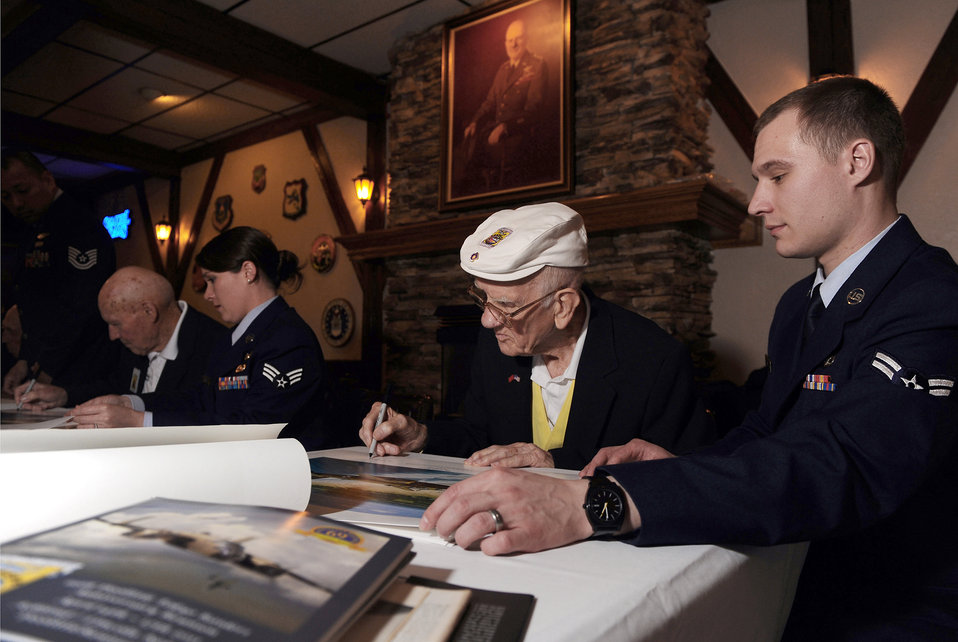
Doolittle Raiders

Doolittle Raider Thomas Griffin, who was a navigator on crew 9, signs autographs at the Doolittle Raiders Lounge April 15, 2011, at Offutt Air Force Base, Neb., as Airman 1st Class Paul Imm, of the 55th Operations Support Squadron, assists. The autograph session was part of the Raiders' 69th annual reunion, which took place April 14 through 17.